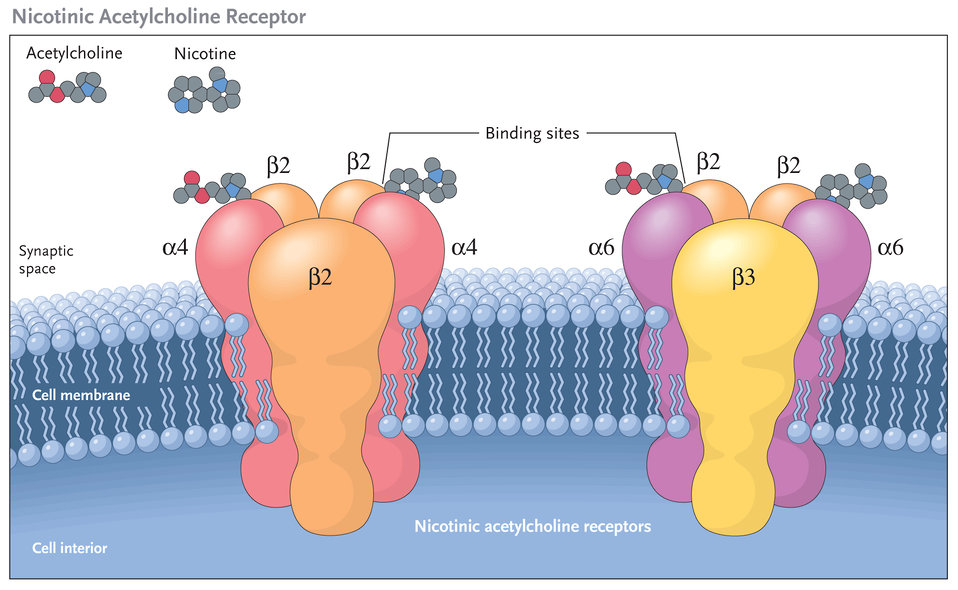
Nicotinic Acetylcholine Receptor

Each nAChR consists of five subunits, drawn from a set of twelve types, designated alpha 2 to 10 and beta 2 to 4.